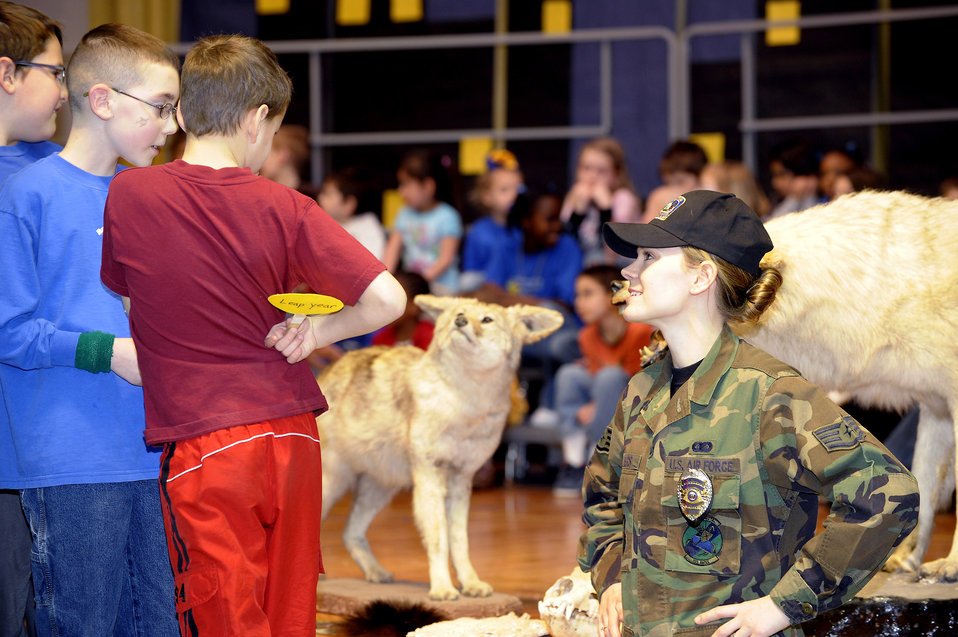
Elemndorf recognized for support of natural resources

Staff Sgt. Sabriena Childers discusses wildlife safety with grade school students at Aurora Elementary during a school assembly. Sergeant Childers is a military conservation agent and took the opportunity to remind the children to avoid putting themselves into situations where they could get hurt by moose, bears and wolves that reside at Elmendorf Air Force Base, Alaska.